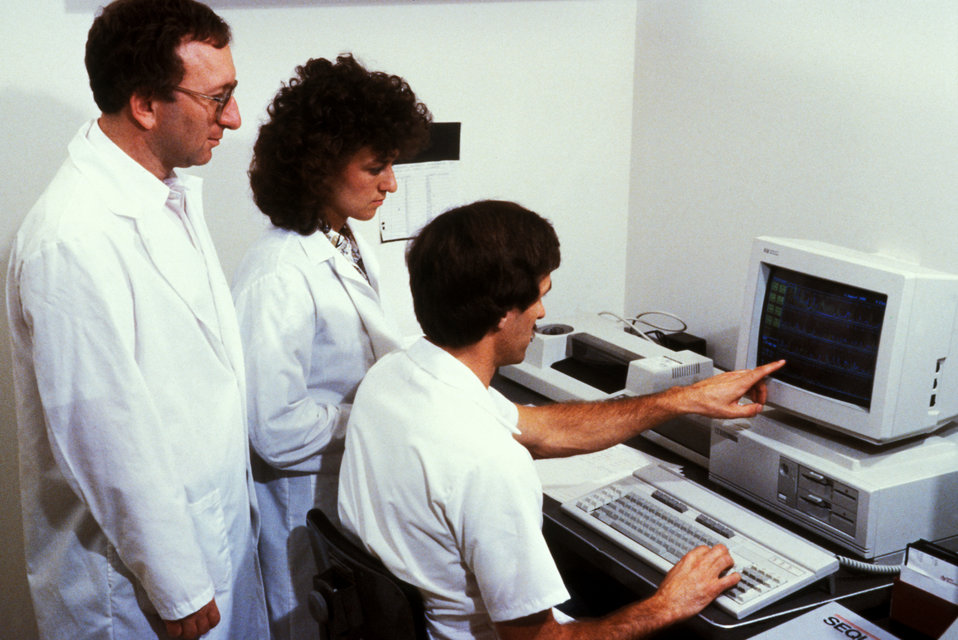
These CDC lab technicians are carrying out AIDS research during 1988 laboratory studies.